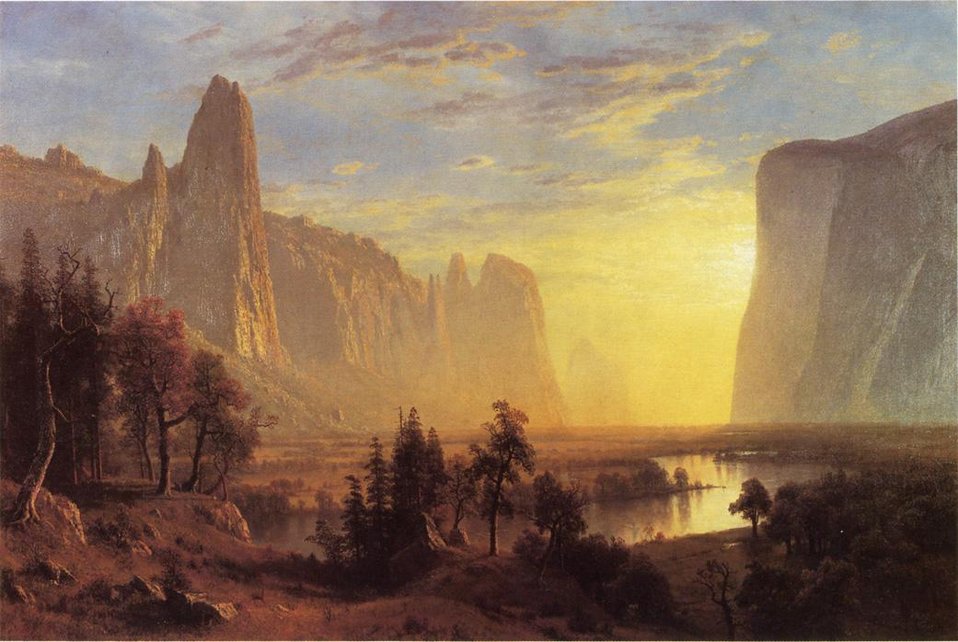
Bierstadt Albert Yosemite Valley Yellowstone Park